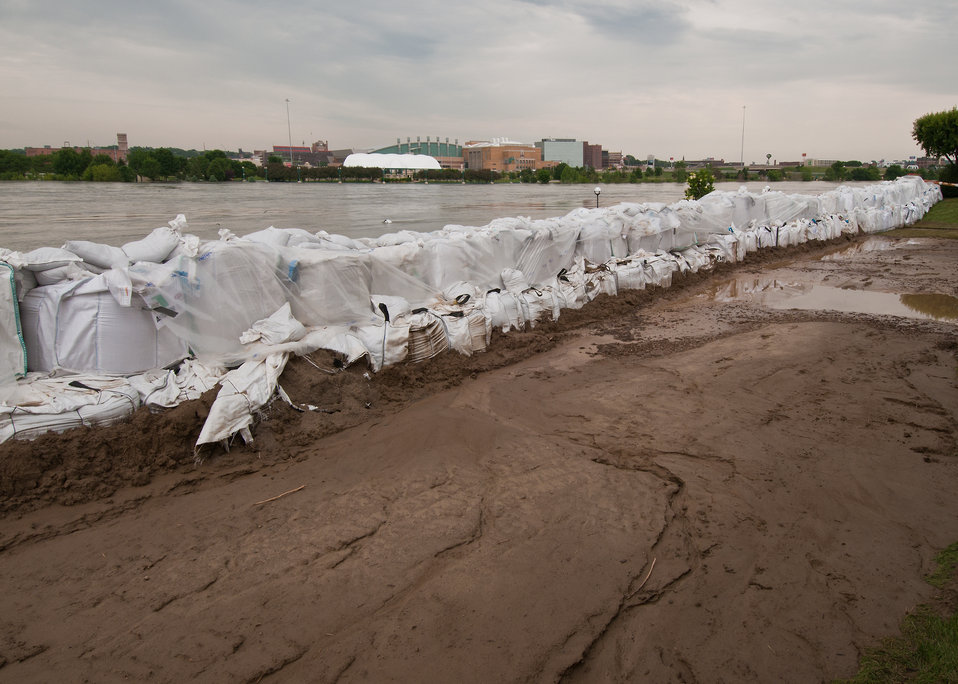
Sand bags along the Missouri River near the Marina Inn, South Sioux City, Nebraska, on Friday, June 17, 2011.. The Missouri river has flooded hundreds of acres in Nebraska and Iowa. Agriculture Secretary Tom Vilsack visited the area along the Missouri River which included stops South Sioux City, Nebraska and Glenwood, Iowa. Secretary Vilsack met with the producers and community leaders is to get a firsthand look to gain the information necessary to better deliver disaster programs expeditiously to effectively respond to this disaster. The visits provided the information necessary for United States Department of Agriculture agencies to producers as they assess recovery efforts in rural areas reeling from a natural disaster. USDA and the entire federal family have been working with state and local officials to provide relief to residents, farmers, ranchers and businesses.